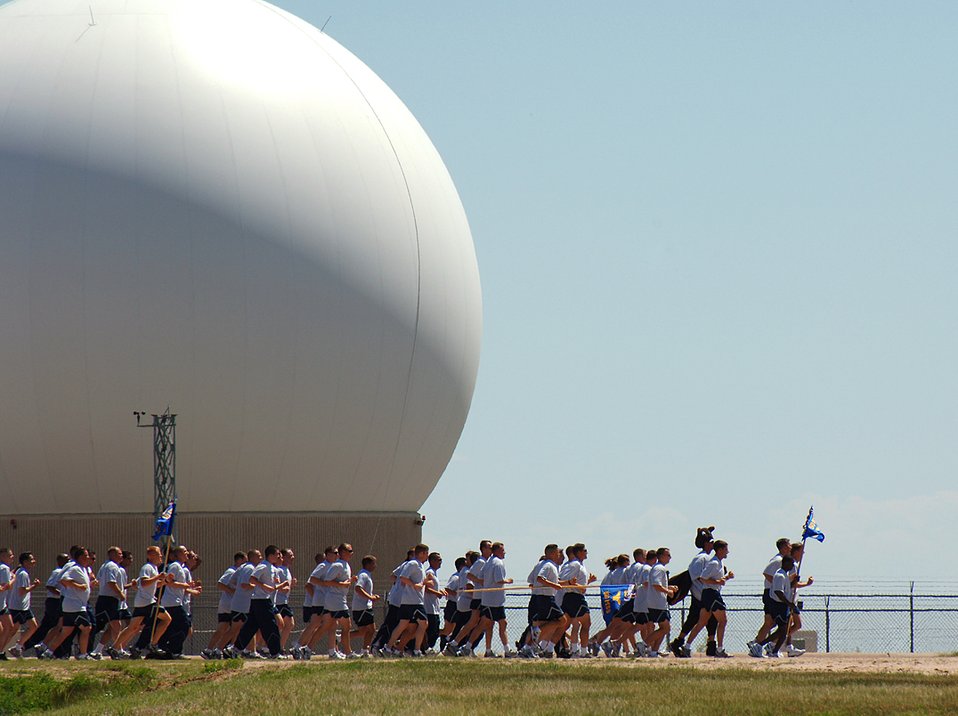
Out for a jog

Airmen with the 50th Space Wing at Schriever Air Force Base, Colo., take part in a two-mile fun run May 11. Guidon bearers took turns sprinting around the front of the formation. In the background is a Colorado Tracking Station radome, part of the Air Force Satellite Control Network and a distinctive feature of the Schriever AFB skyline.